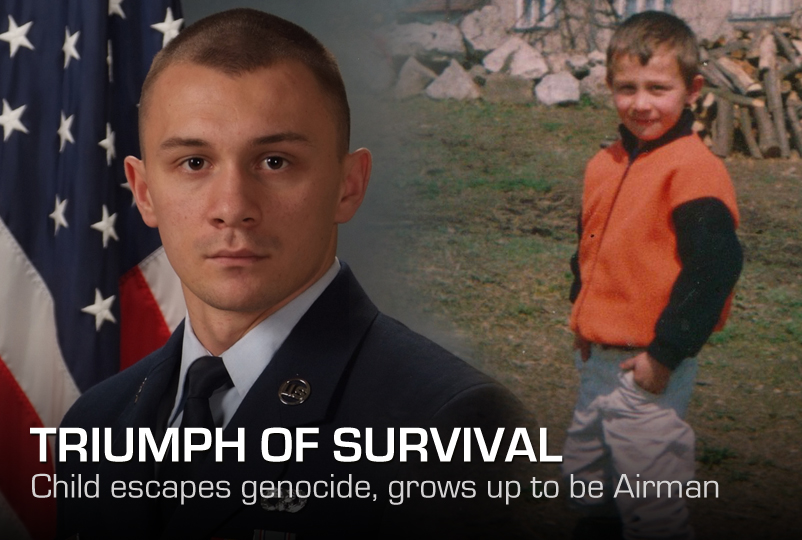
Triumph of survival